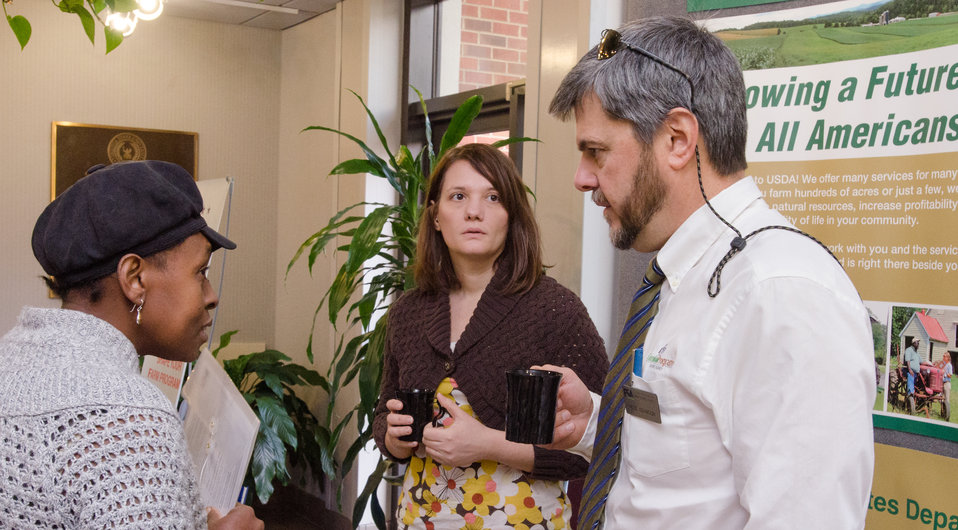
U.S. Department of Agriculture (USDA) Farm Service Agency Farm Loan Programs Chief Pete Adamson, right, and Agriculture Program Specialist Allison Wash, center, spoke with numerous farmers eager for information, before the start of the “Virginia State University (VSU), U.S. USDA and Virginia Farmers Working Together” outreach workshop in the VSU, L. Douglas Wilder building on Thursday, March 7, 2013, in Petersburg, VA. Farmers shared and learned new ways to do more with USDA services, and how to apply for programs that will help grow their business.